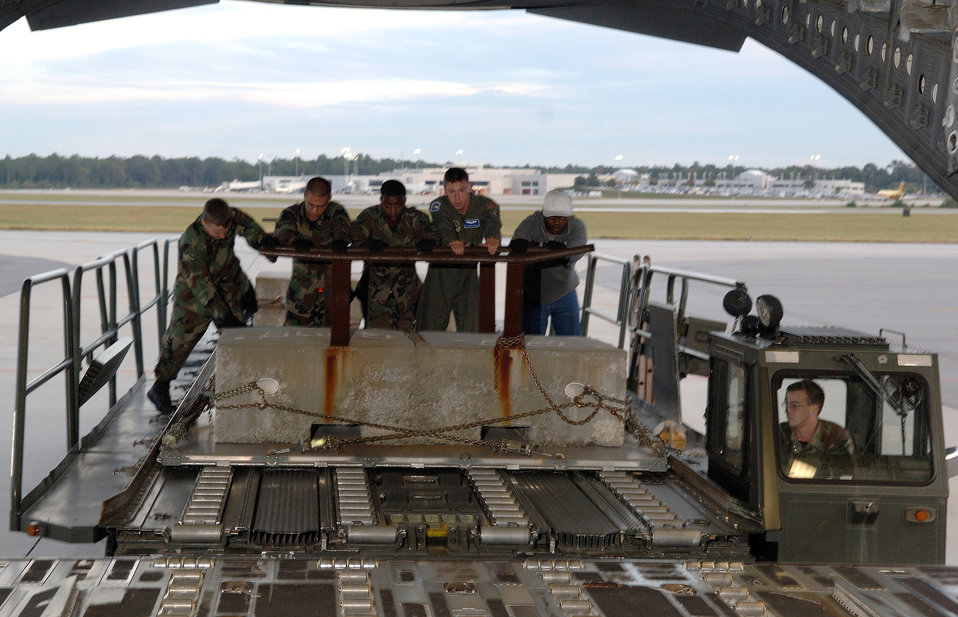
Loadmaster

Airman 1st Class Derrick Maloney, second from right, and ramp loaders from the 437th Aerial Port Squadron, push cargo onto a C-17 Globemaster III at Charleston Air Force Base, S.C., Oct. 26. Airman Maloney is a loadmaster with the 17th Airlift Squadron.